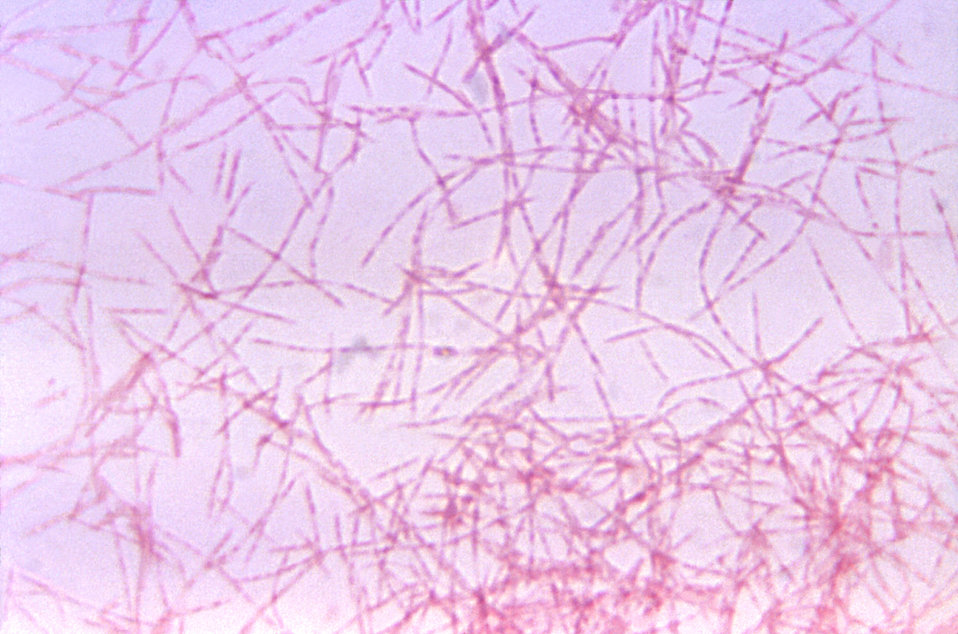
This photomicrograph shows the bacterium Fusobacterium fusiforme cultured in a thioglycollate medium for 48 hours.